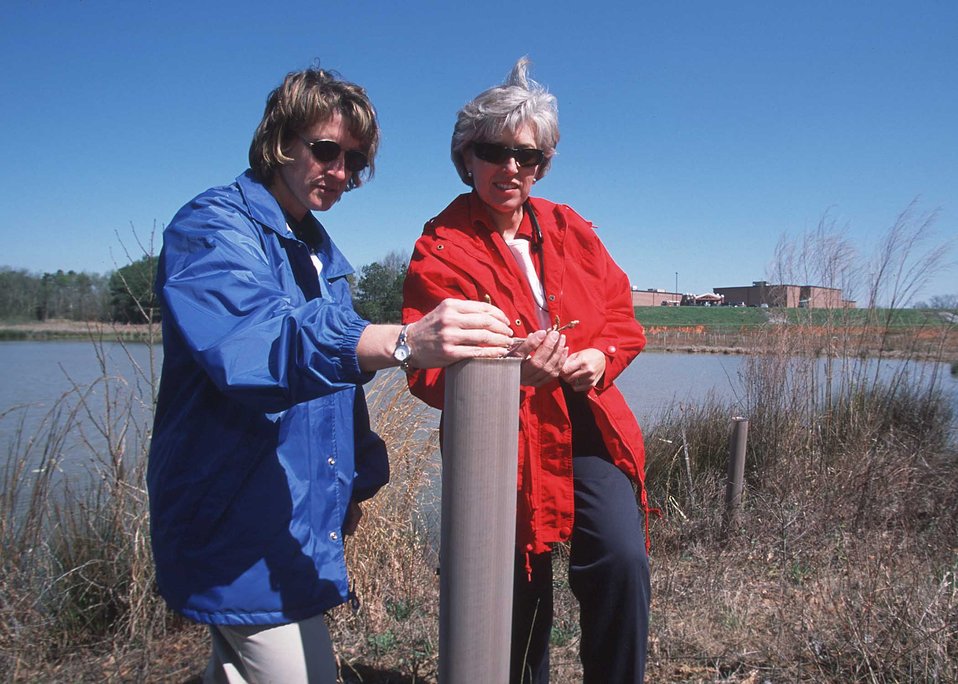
District Conservationist Carman Westerfield and Leesa Woodal, Executive Director, Lamar County Exposition Authority tour new tree planting on Barnsville Exposition Center. Assistance provided by RC&D and NRCS.